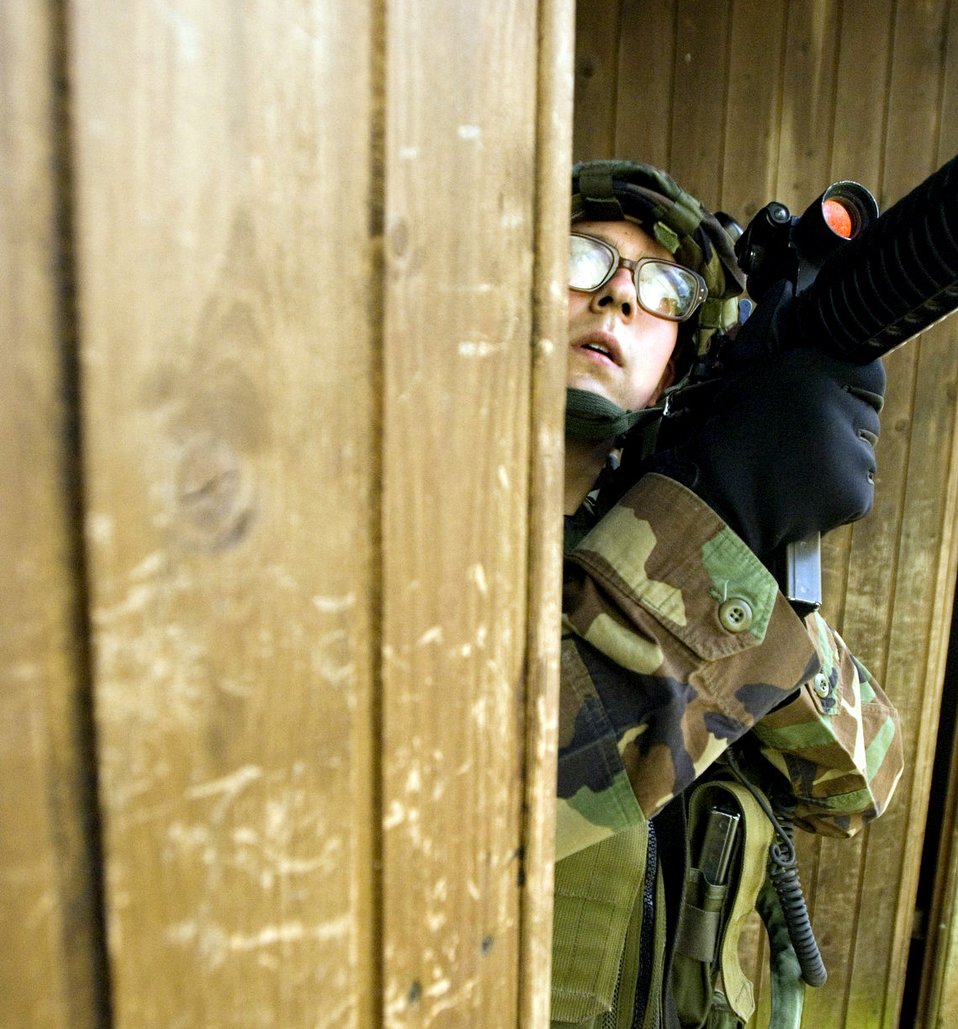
Urban terrain training

Airman 1st Class Joseph Toth looks for opposing forces during military operations in urban terrain training in Baumholder, Germany, on Sunday, May 14, 2006. Training is conducted by Airmen of the 786th Security Force Squadron at Sembach Air Base, Germany. Airman Toth is with the 31st Security Forces Squadron at Aviano Air Base, Italy.